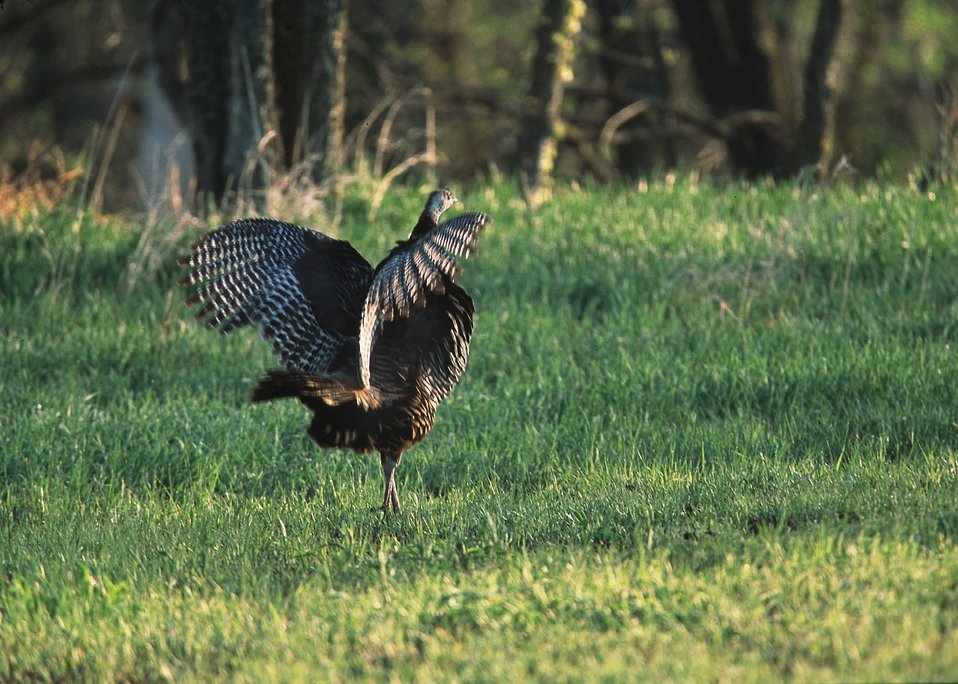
Wild turkeys feeding in wheat field. Kansas.